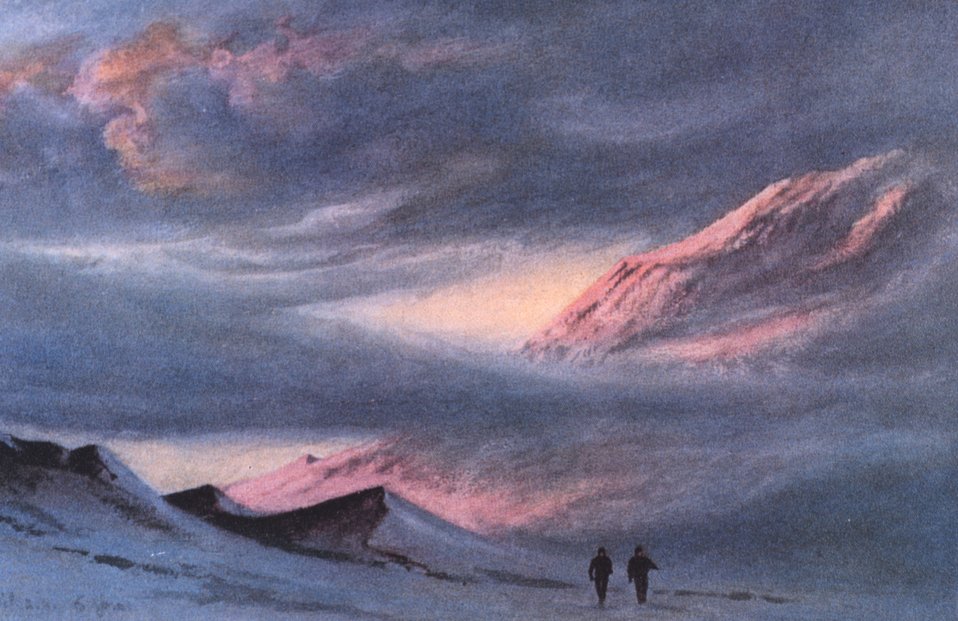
A sunset from Hut Point, April 2nd, 1911. In: 'Scott's Last Expedition', 1913. Dodd, Mead, and Company, New York. P. 150. Vol. I. Library Call Number G850 1910 .S35 1913.